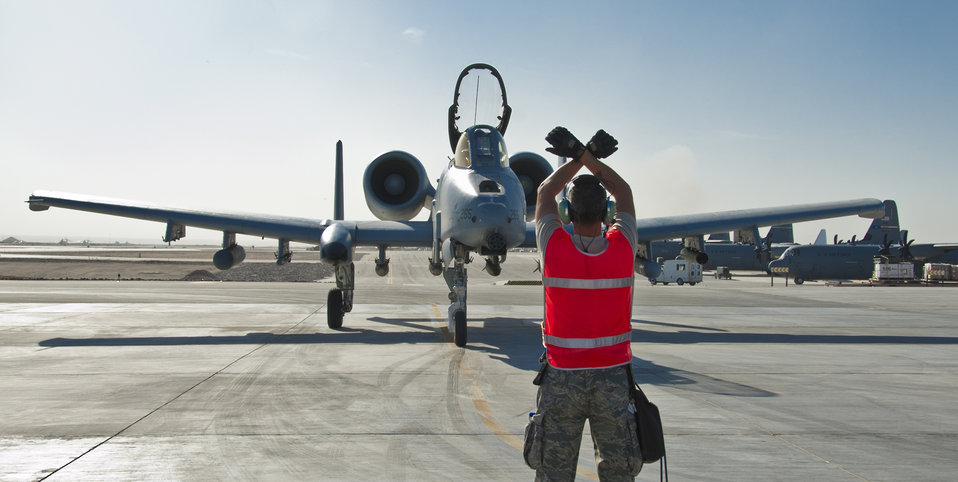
Cleared for take off

Tech. Sgt. James Foster marshalls an A-10 Thunderbolt II for an end-of-runway inspection Nov. 10, 2011, at Kandahar Airfield, Afghanistan. The EOR inspection ensures the aircraft is safe before taxing to its spot. Foster is a weapons load crew chief assigned to the 107th Aircraft Maintenance Unit.